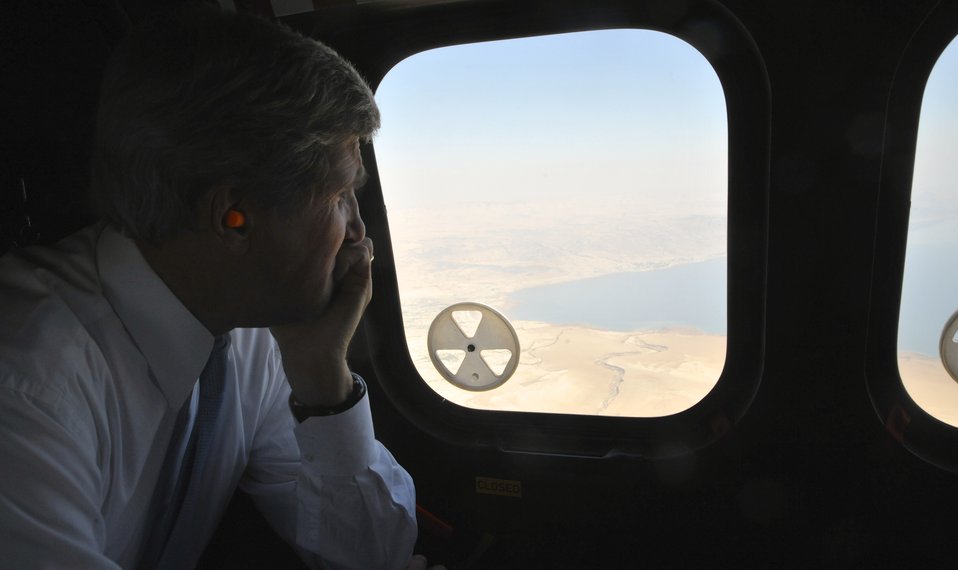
Secretary Kerry Looks Out Over the Dead Sea

U.S. Secretary of State John Kerry looks down at the Dead Sea as he flew in a helicopter from Amman, Jordan, to Jerusalem on June 28, 2013.